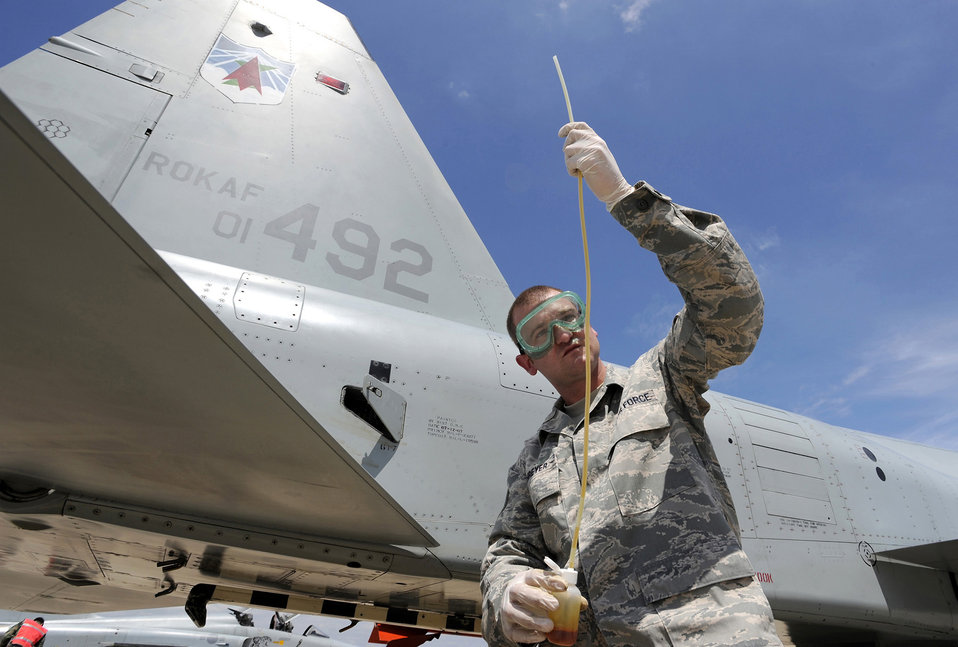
Osan cross-servicing program fosters good relations

Staff Sgt. Trenton Schreyer checks the oil in an F-5 Tiger II engine Aug. 10 at Osan Air Base, South Korea. He is servicing the F-5 as part of the Osan AB combat cross-servicing program. The program is a mutual agreement between U.S. and South Korean air forces that allows the maintainers from both services to get hands-on experience working on each other's aircraft. Sergeant Schreyer is a transient alert crew chief.